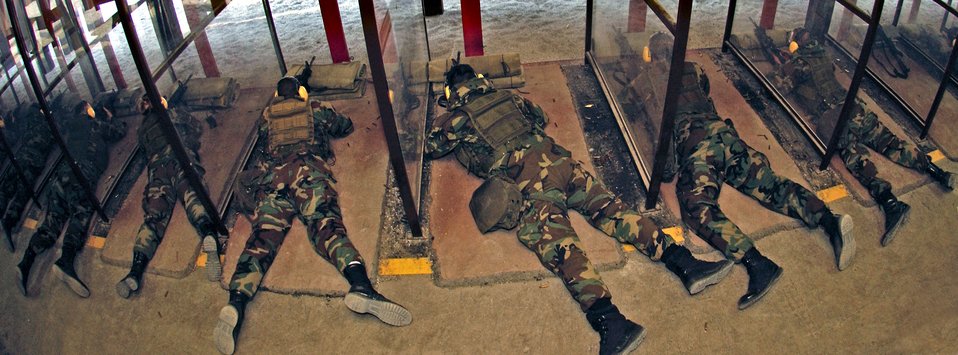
Ready, aim ....

AVIANO AIR BASE, Italy -- Security forces Airmen from the 31st Security Forces Squadron fire the M-4 during combat arms training here. They are required to fire the weapon twice a year to retain qualification.